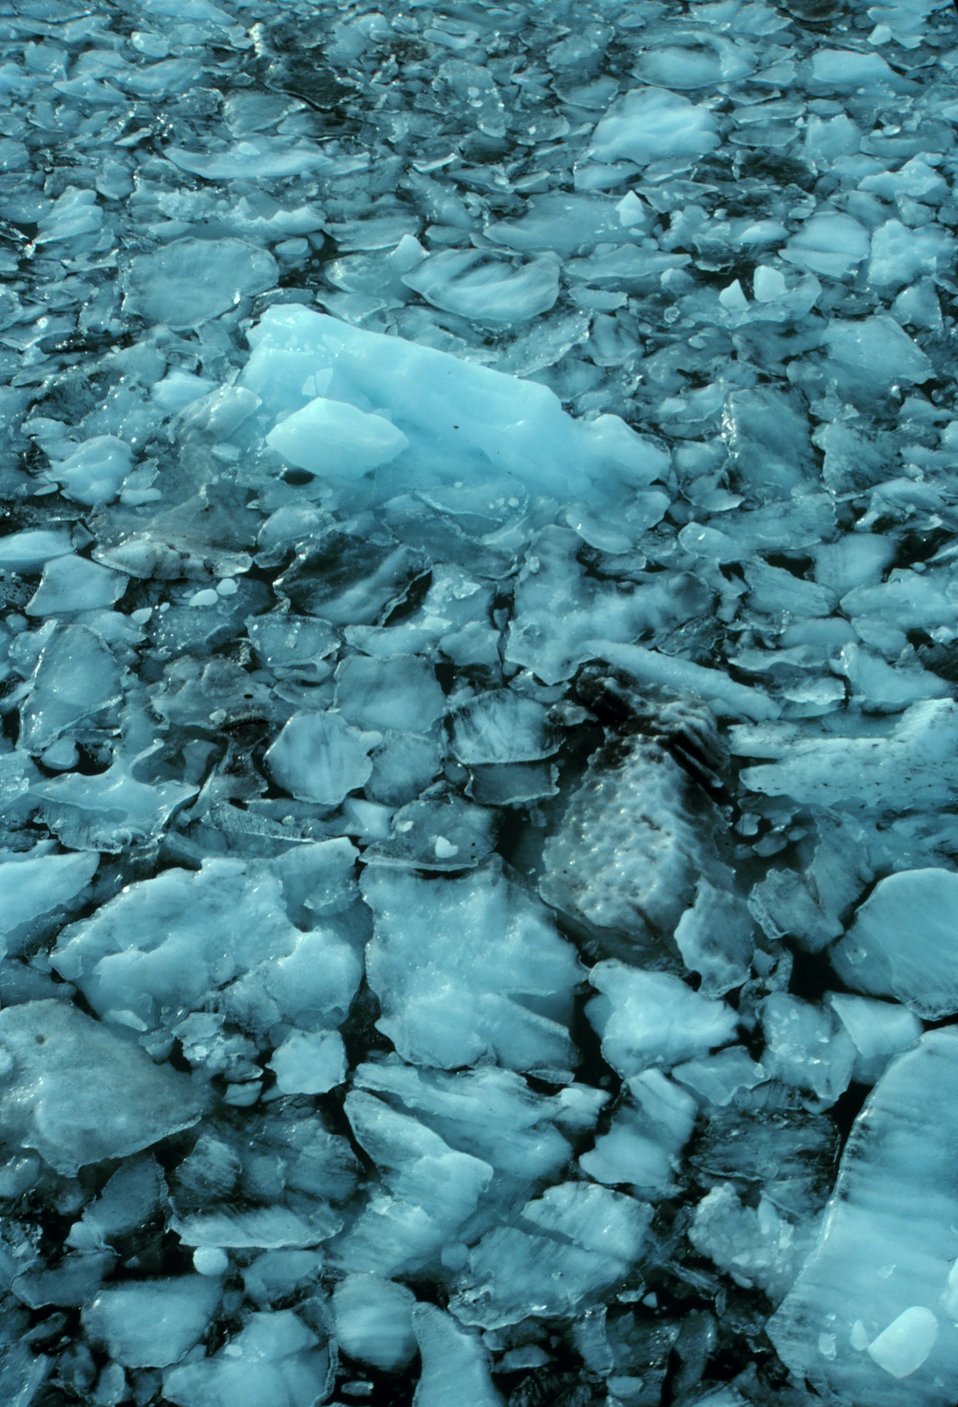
Glacial ice chunks in Icy Bay.